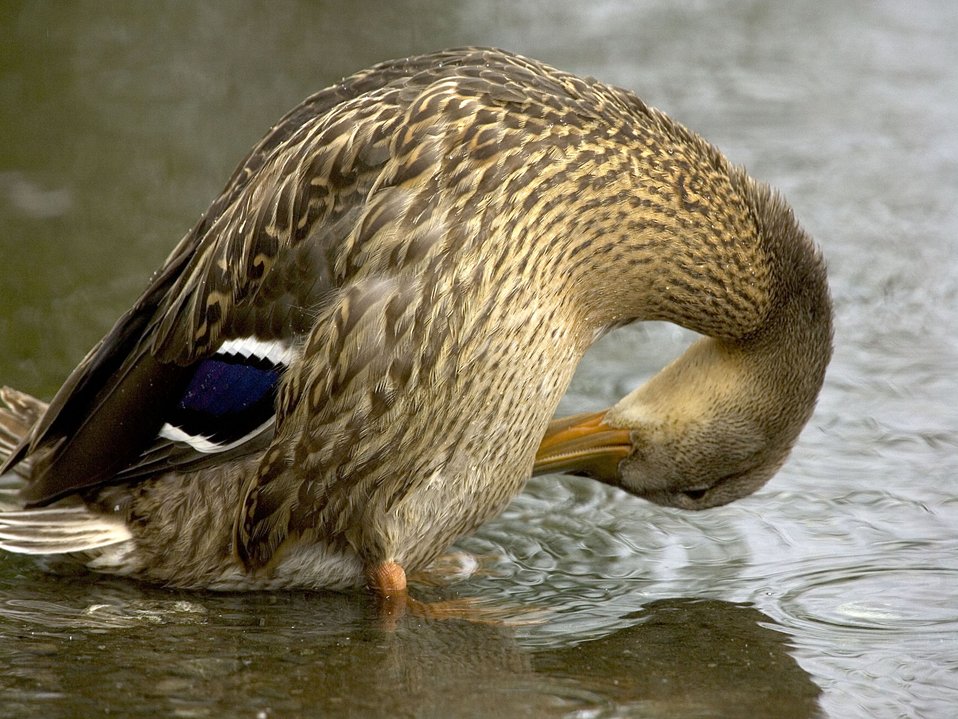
Mallard hen, Kenai NWR

A mallard hen preens herself in the waters of Kenai National Wildlife Refuge in Alaska.